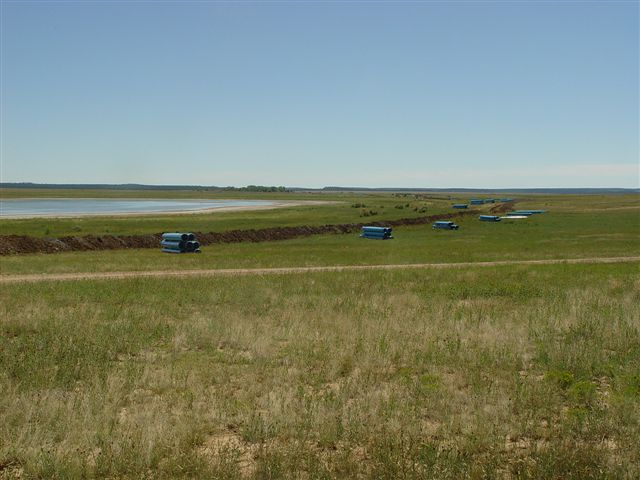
Las Vegas 1

New PVC pipes lie in stacks along the edge of a lake and grassland on Las Vegas National Wildlife Refuge in Las Vegas, N.M. The refuge was awarded more than $600,000 in Recovery Act funds to rehabilitate a nine-mile water delivery and pipeline system and replace dilapidated wire fence on the refuge.